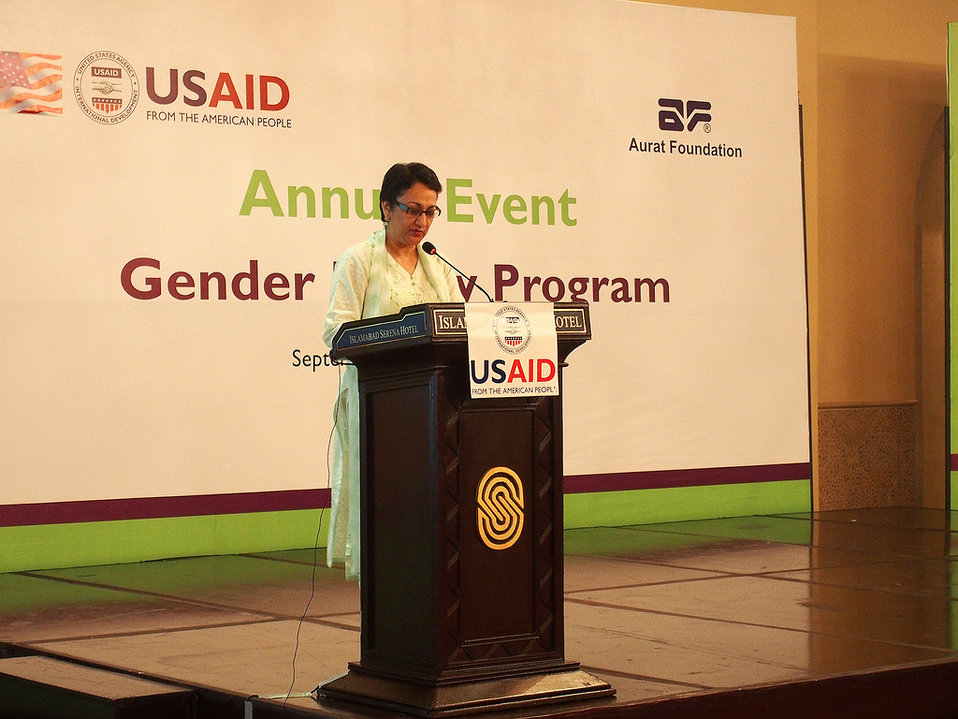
Gender Equity Program, Pakistan

USAID and Aurat Foundation annual event in Islamabad, Sept. 20, 2013